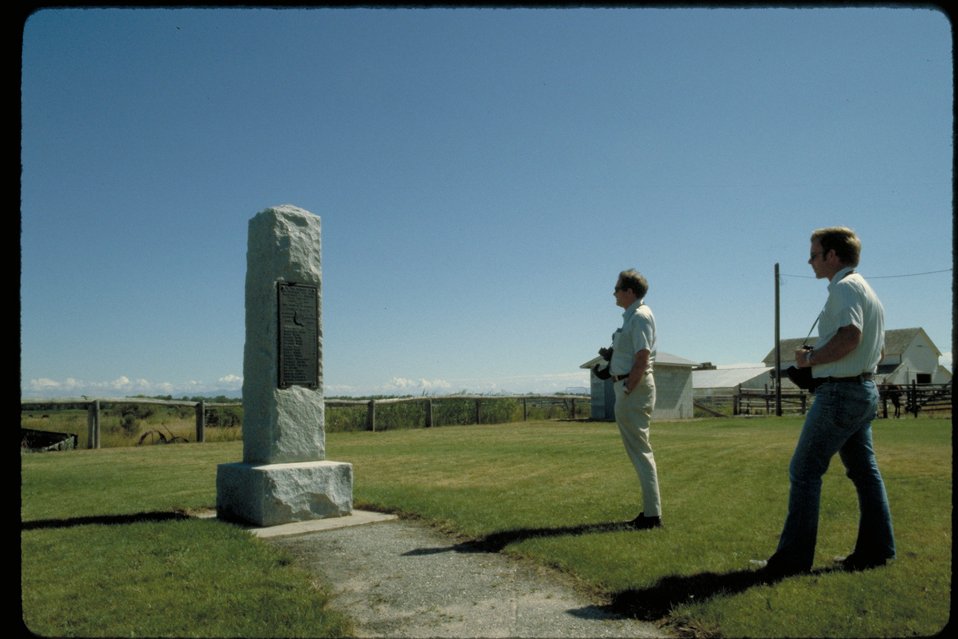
Ward Massacre Oregon Trail Lower Snake River District